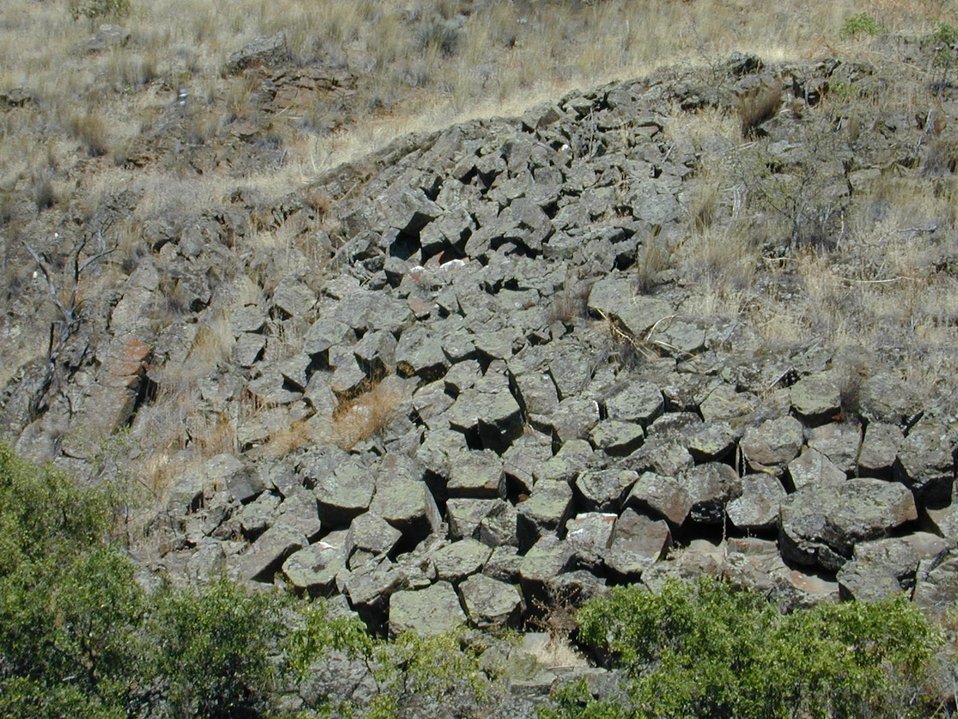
Hexagonal Basalt along the Lower Salmon River Cottonwood Field Office UCSC Upper Columbia Salmon Clearwater District